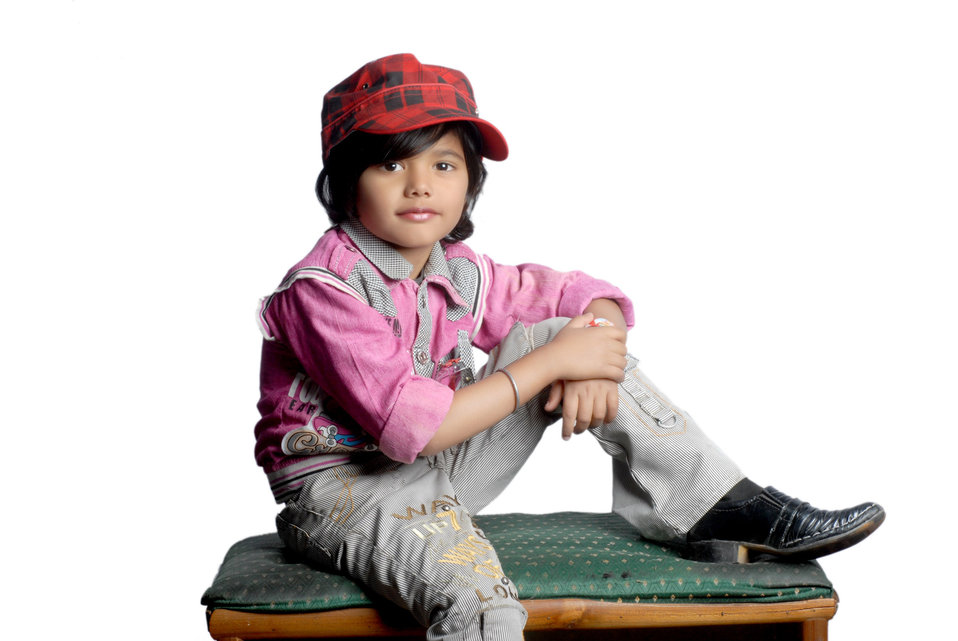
Bhauttik

Super kid model.